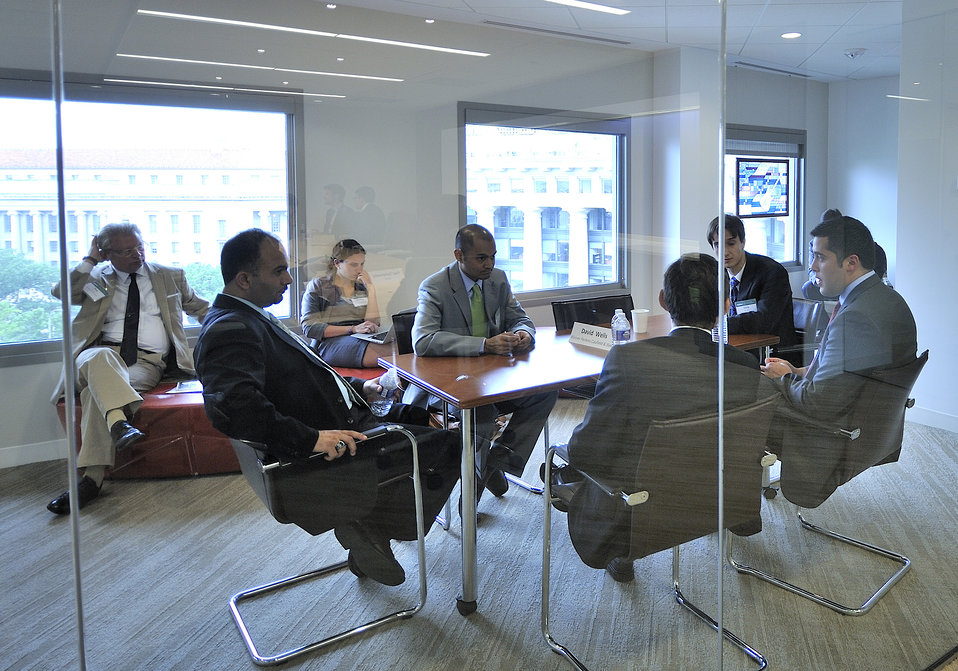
National Clean Energy Business Plan Competition

The National Clean Energy Business Plan Competition inspired nearly 300 university teams across the country to create new businesses to commercialize promising energy technologies developed at U.S. universities and the National Laboratories.